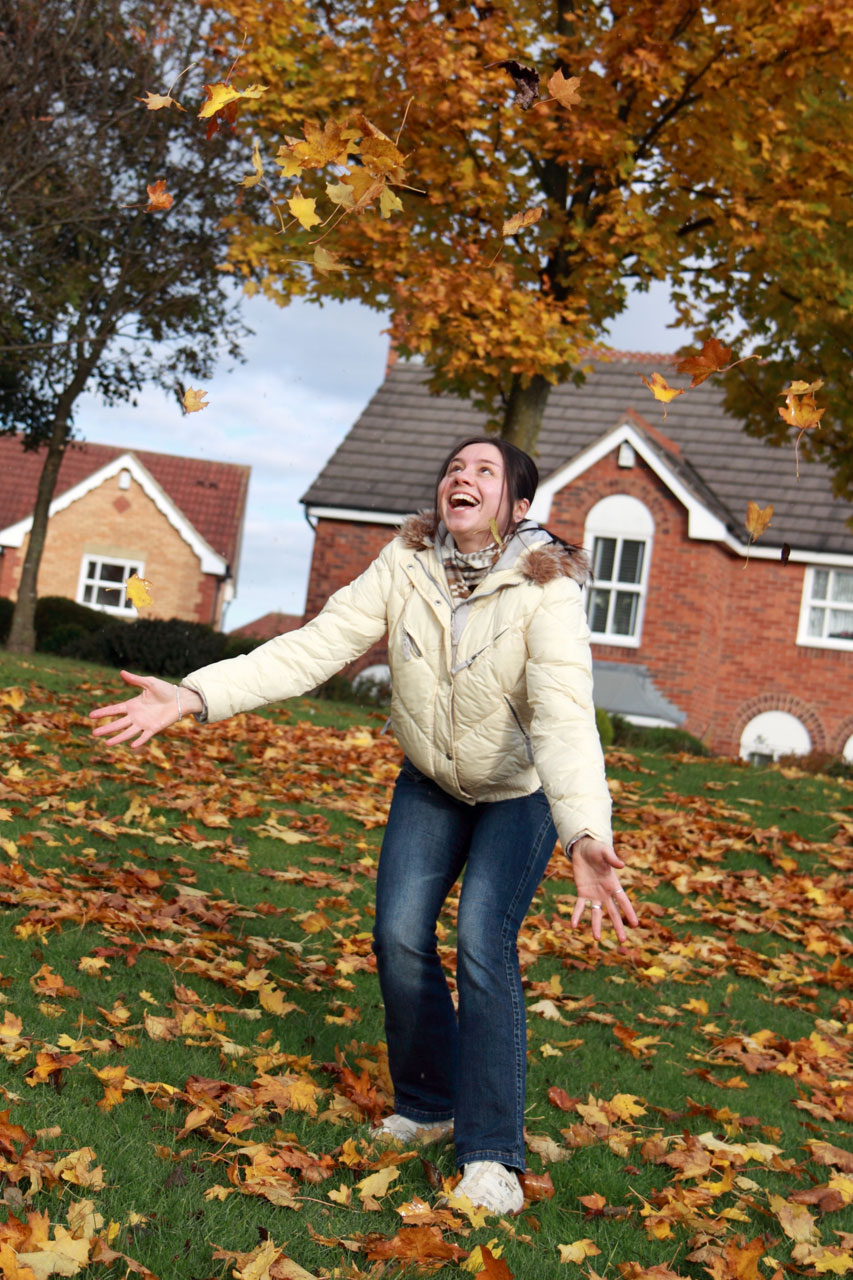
Girl in autumn

Girl throwing leaves in the air in autumn.